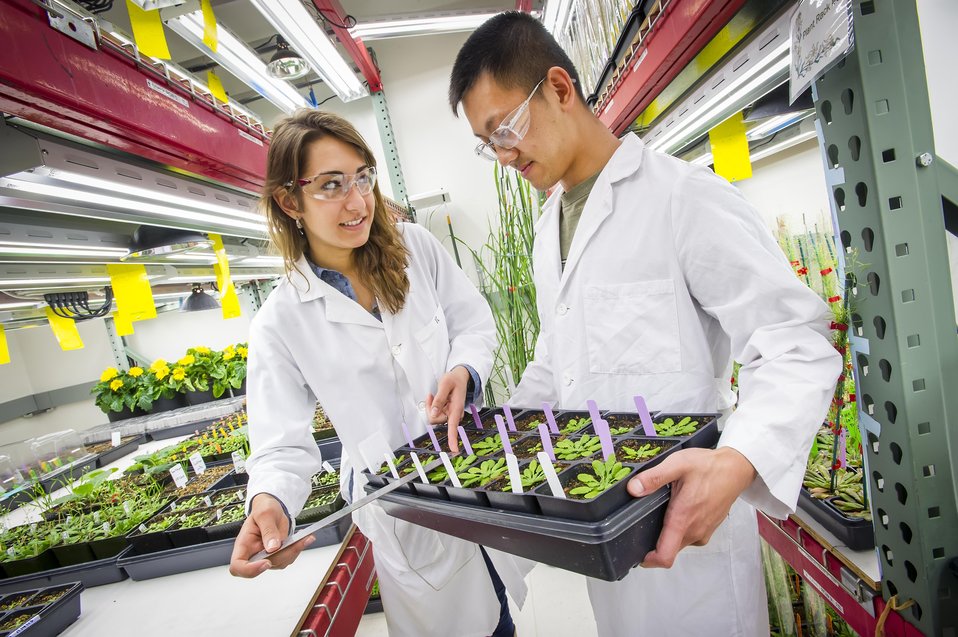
An intern and mentor participating in Lawrence Berkeley National Laboratory's Center for Science and Engineering Education (CSEE).

The CSEE is LBNL's mission to inspire and prepare the next generation of scientists and engineers.